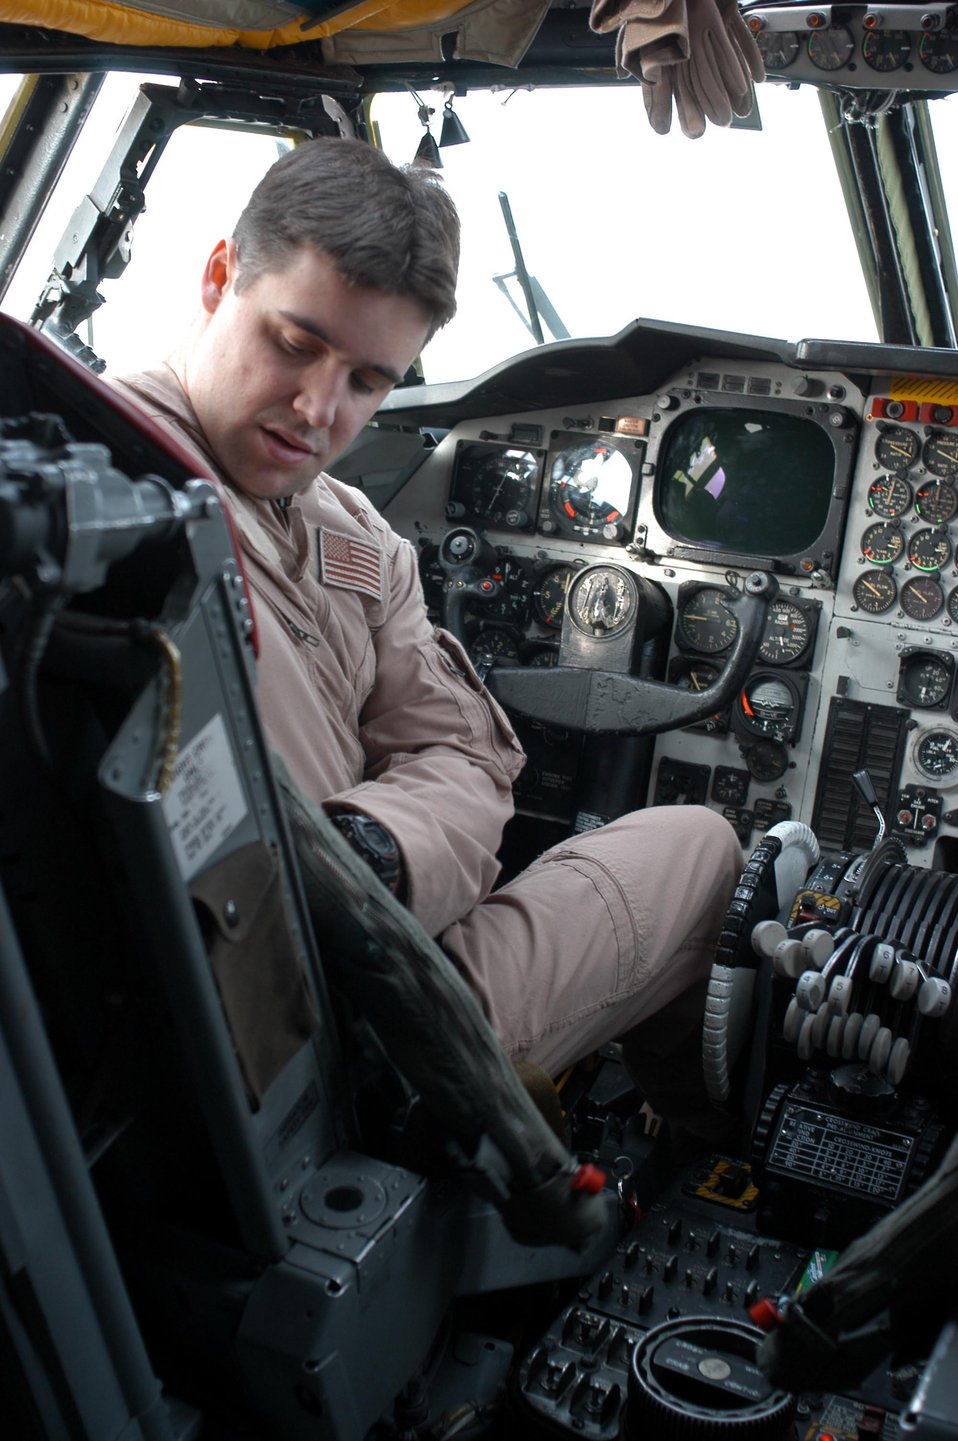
Seat check

OPERATION IRAQI FREEDOM -- Capt. Jason, a B-52 pilot, checks his ejection seat and gets ready for a mission March 21.